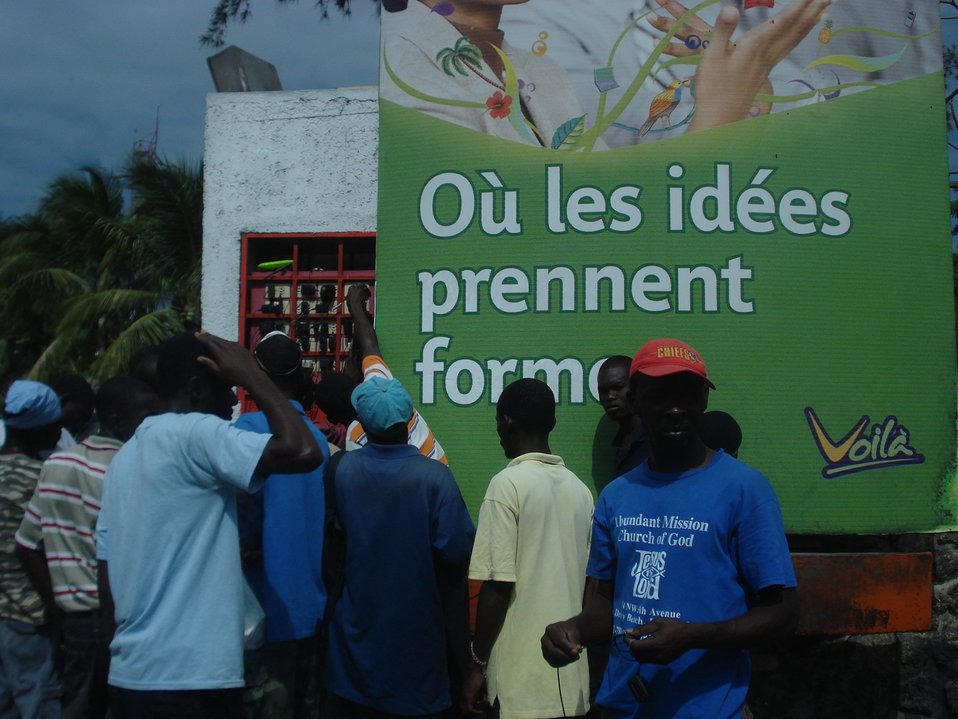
Cell Phone Charging Station (Haiti Earthquake - 2010)

Photos shot by team sent by the FCC to assist communications recovery in Haiti. Photos shot by team sent by the FCC to assist communications recovery in Haiti.